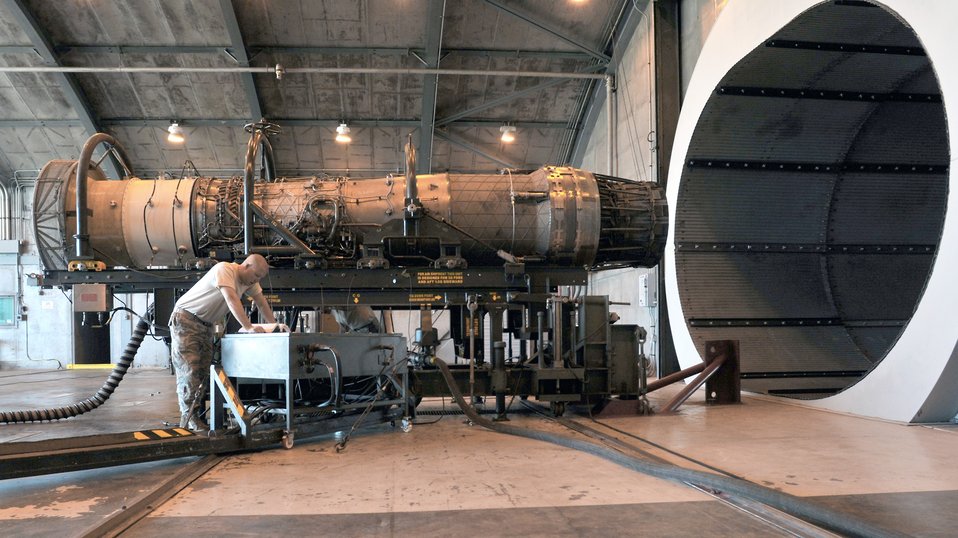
F-15 Eagle engine test run

Tech. Sgt. Kenneth Creager reviews a technical order for an F-15 Eagle engine to help trace an error code revealed during an engine test run November 10, 2010, at the Florida Air National Guard base in Jacksonville International Airport, Fla. Sergeant Creager is assigned to the 125th Fighter Wing propulsion shop.